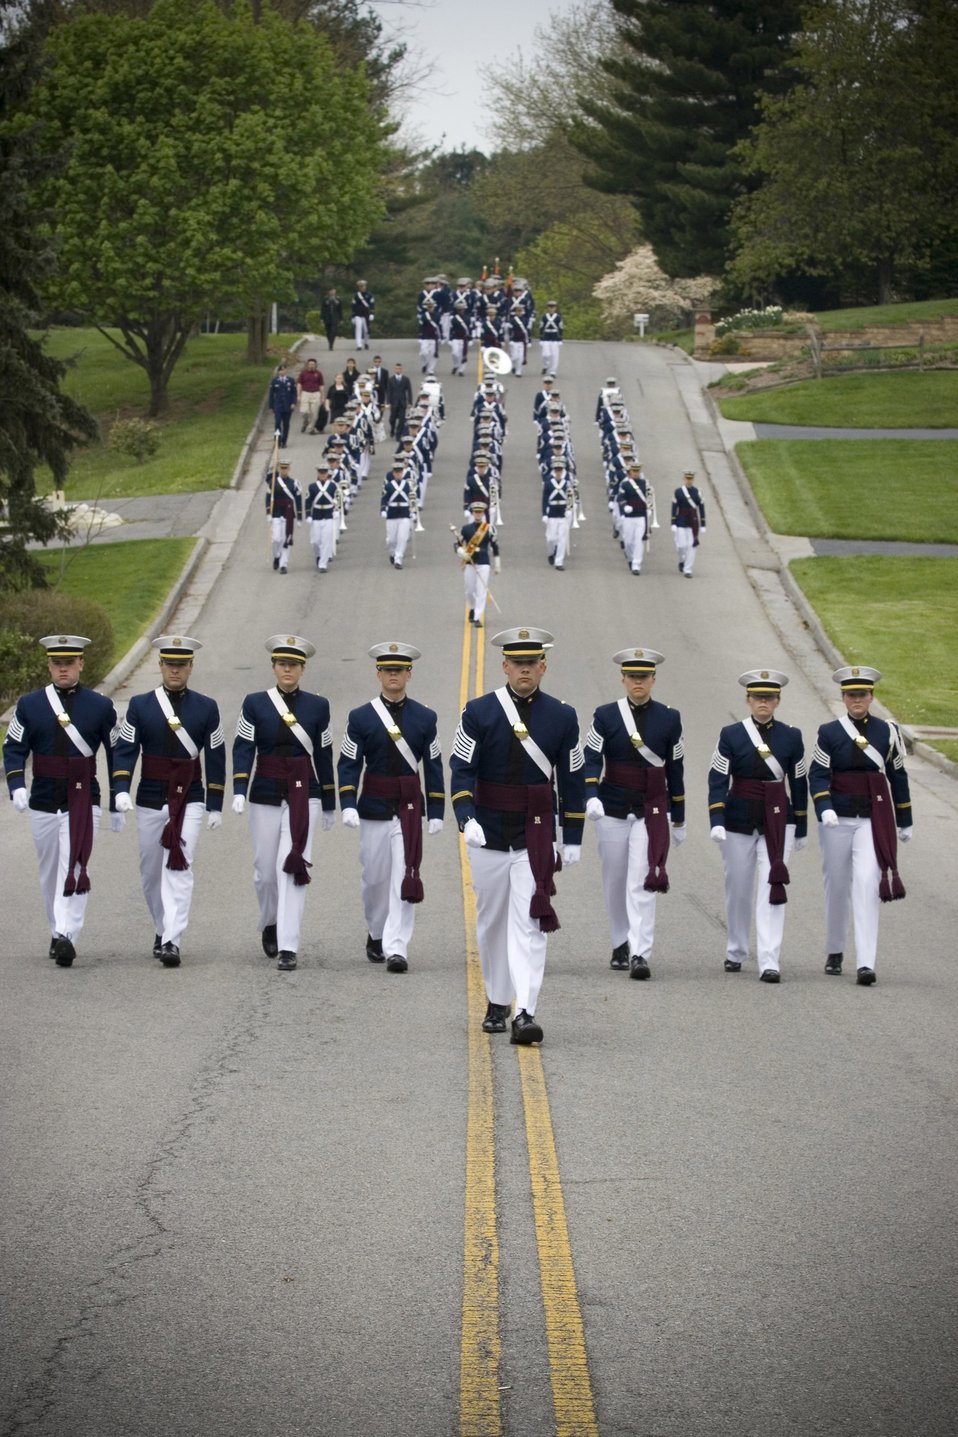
Virginia Tech corps of cadets pay honors to one of their own

Cadet Andrew Archut leads the regiment of the Virginia Tech Corps of Cadets through the streets of Blacksburg, Va., April 25. The regiment paid honors to one of their classmates. Cadet Matthew La Porte, a sophomore in Air Force ROTC Detachment 875 and the Virginia Tech Corps of Cadets, was one of the 32 students and faculty killed during the shooting incident at the school April 16.